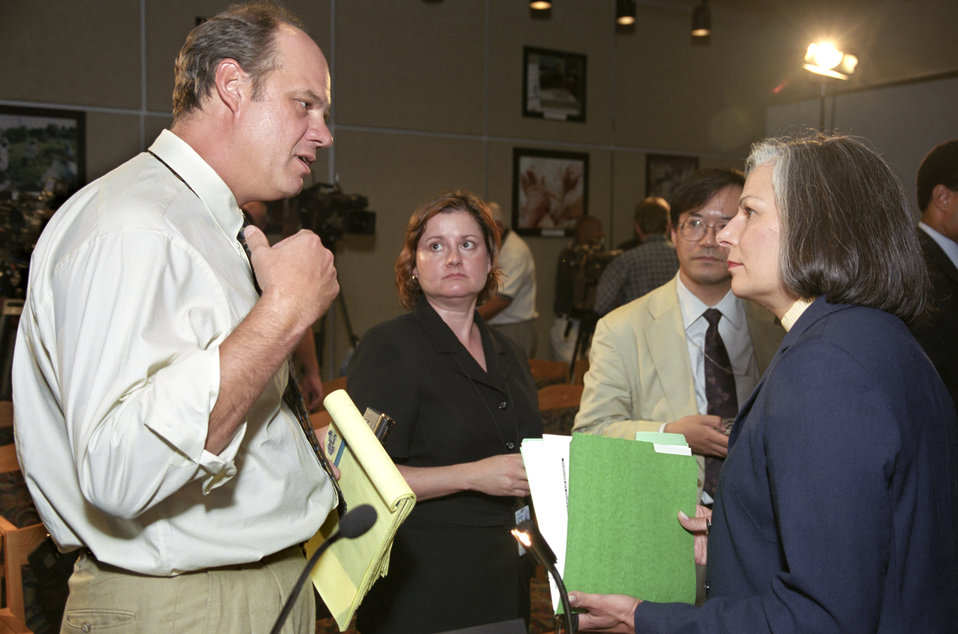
Former Director of the CDC (2002 - 2008), Julie Gerberding MD, MPH speaks with reporters during August's Bioterrorism Preparedness Press Briefing.